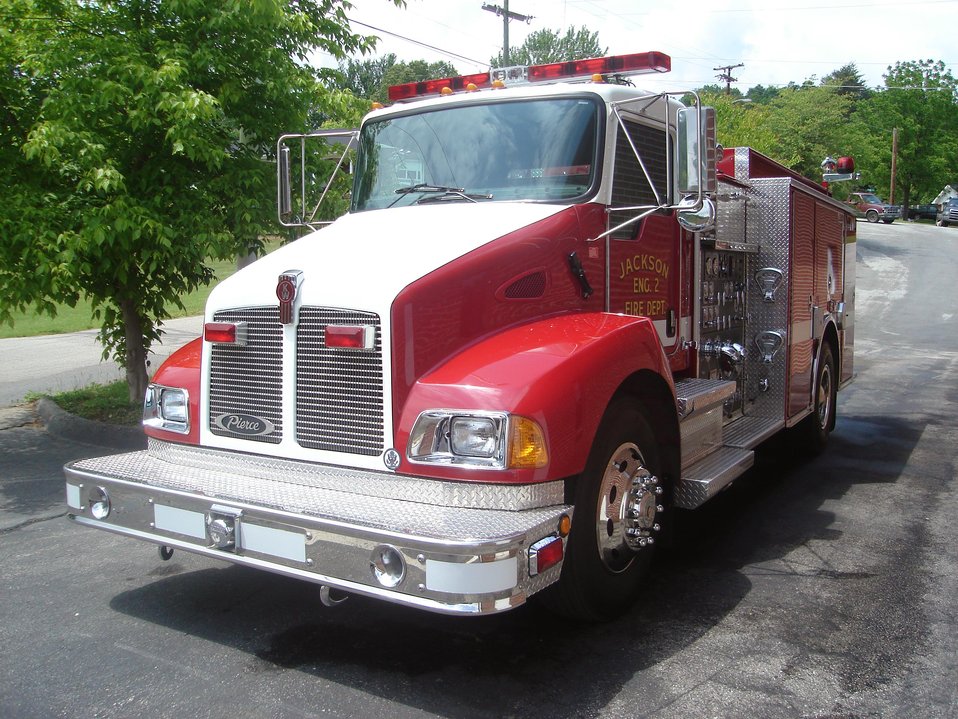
Engine 2 serving the Jackson Fire Department, KY. 2003 Pierce Contender-Kenworth single cab